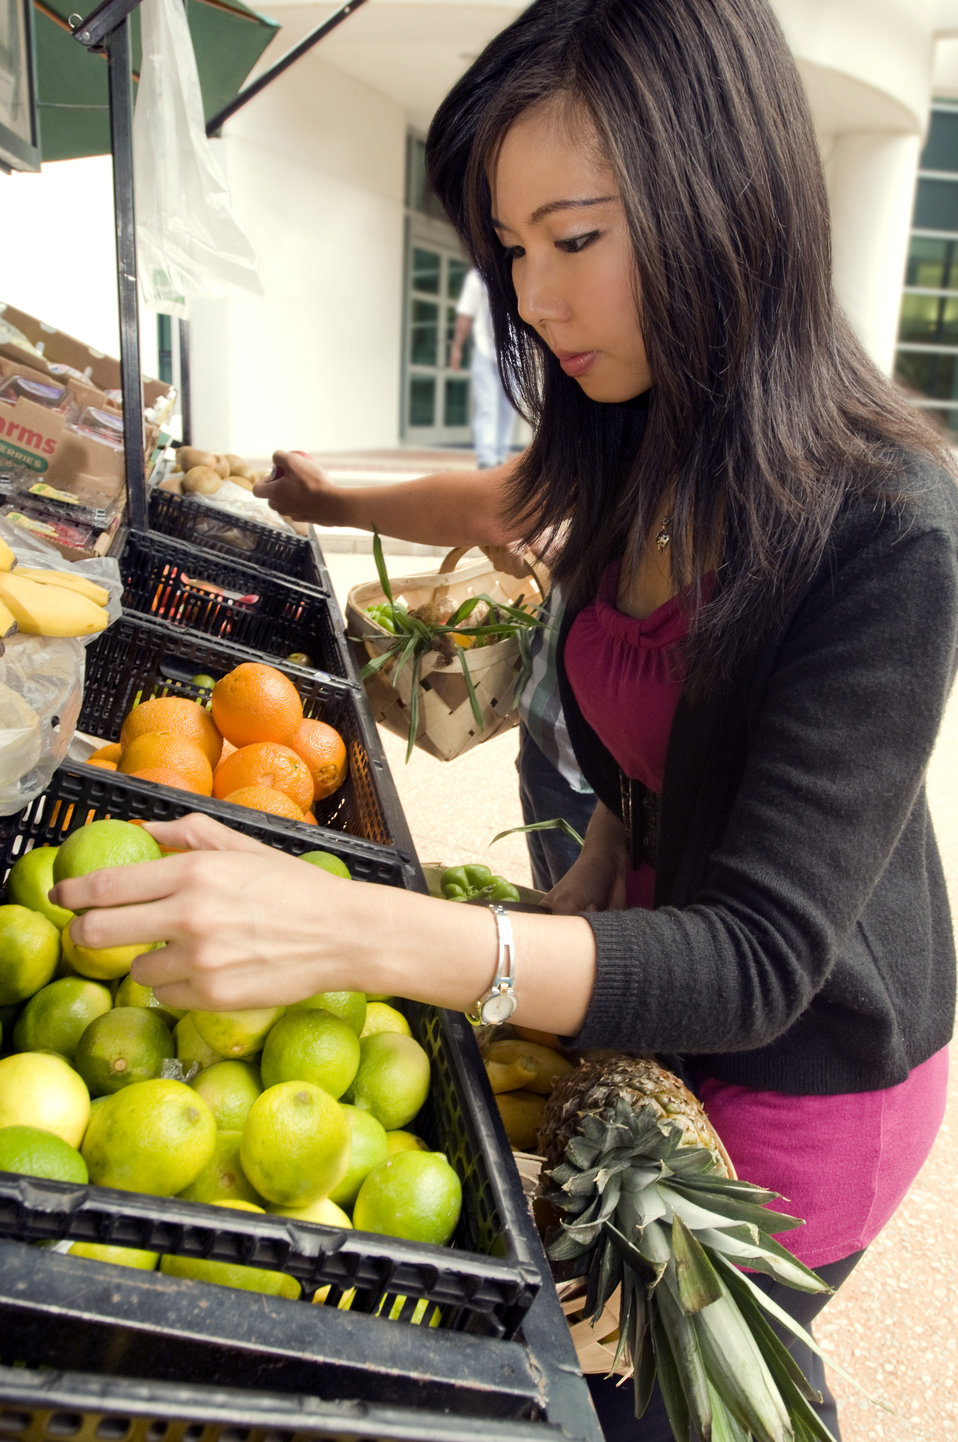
This woman was photographed as she was shopping for groceries at a mobile Georgian farmers market at a point in her activity where she was choosing from a bunch of green limes in the market's produce section. Here she'd picked up a single lime, which she was inspecting in her left hand, while in her right hand she was carrying her woven wooden shopping basket that was filled with other choices in produce she'd made.